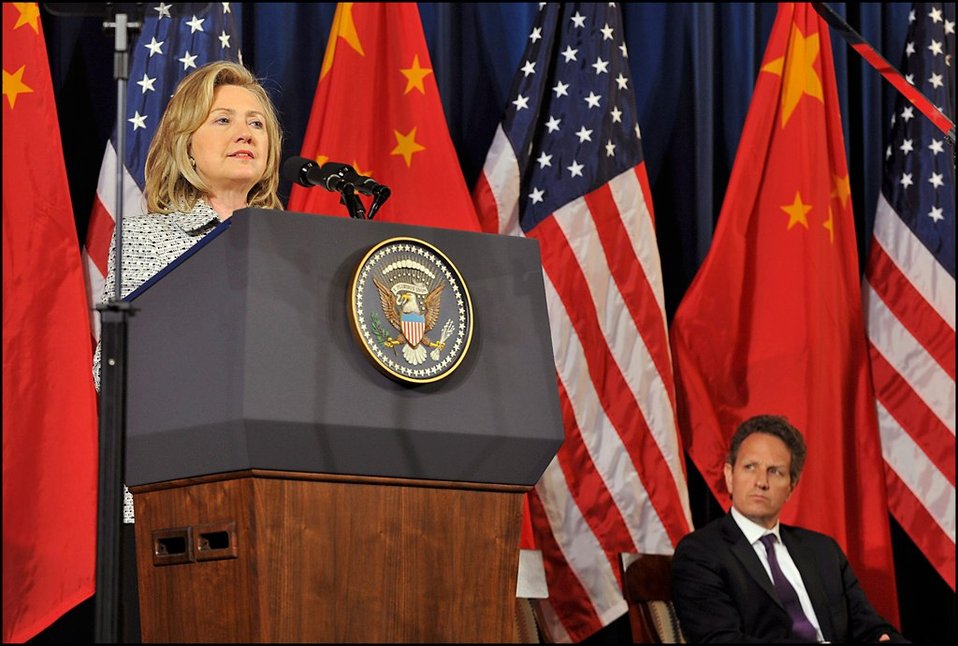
U.S.-China Strategic and Economic Dialogue

Treasury Secretary Tim Geithner watches as Secretary of State Hillary Clinton speaks at the opening session of the third U.S.-China Strategic and Economic Dialogue held in Washington, DC on May 9th and 10th.